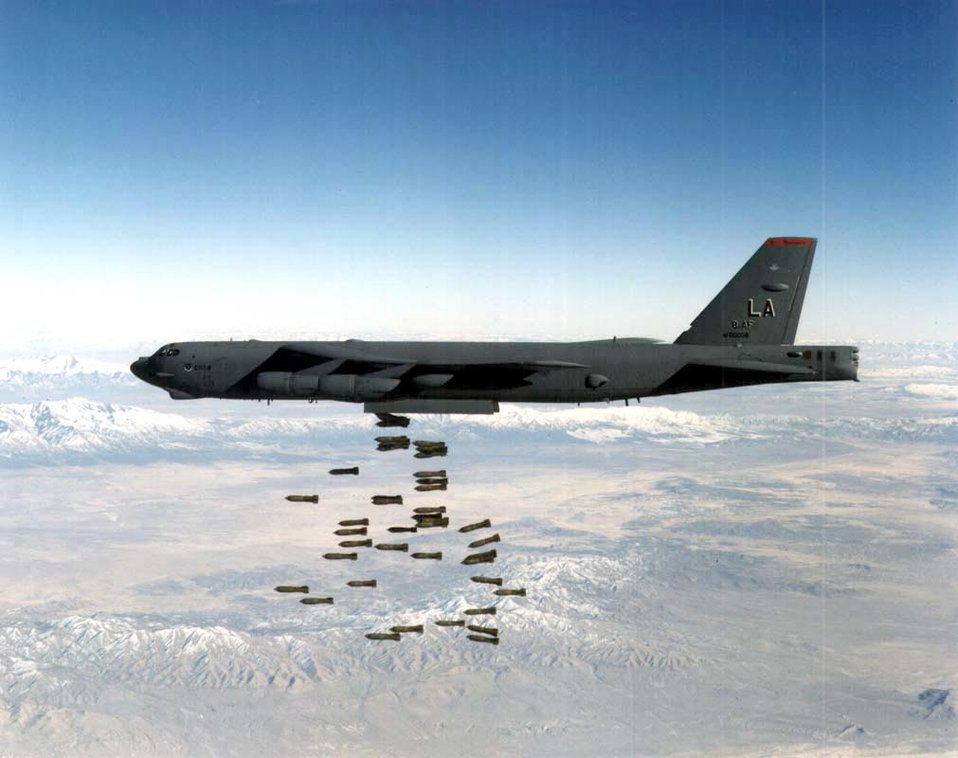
Bombs Away

OVER NEVADA -- A B-52H Stratofortress drops a load of M-117 750-pound bombs during a training run here. During Desert Storm, B-52s delivered 40 percent of all the weapons dropped by coalition forces. The first Gulf War saw the longest strike mission in the history of aerial warfare when B-52s took off from Barksdale Air Force Base, La., launched conventional air-launched cruise missiles and returned to Barksdale -- a 35-hour, non-stop combat mission.